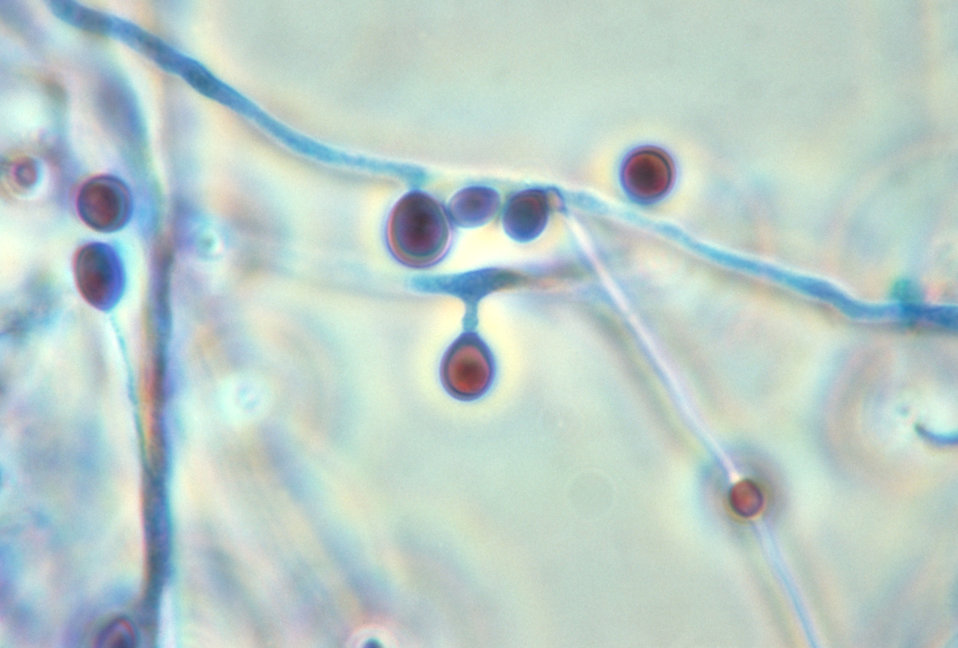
This photomicrograph shows a conidiophore with a number of conidia of the fungus Pseudallescheria boydii.